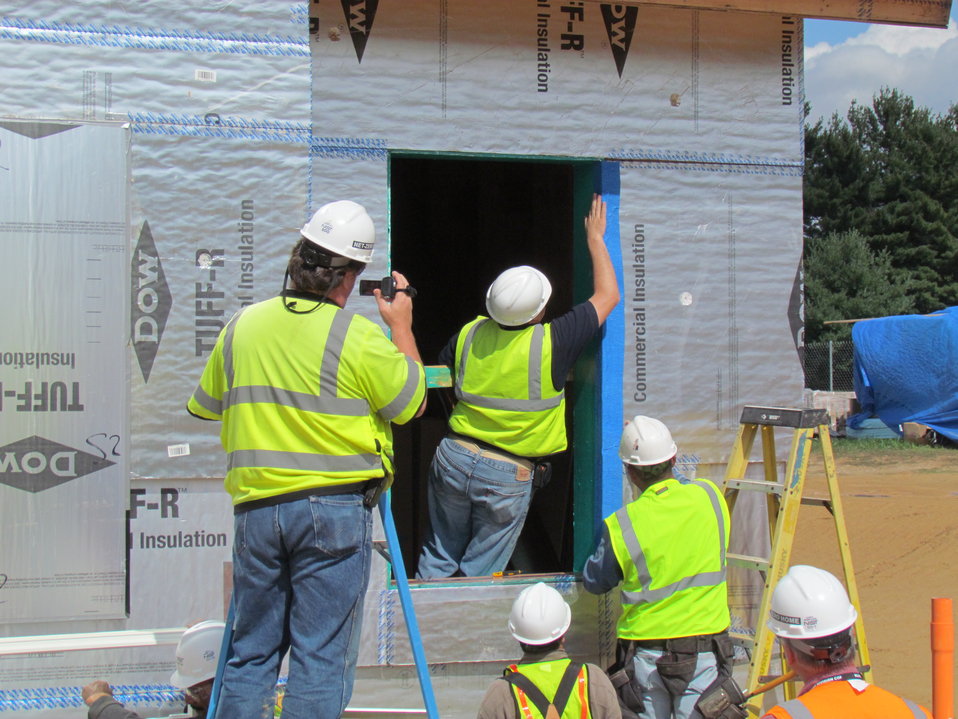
Net-Zero Energy Residential Test Facility - Preparing for installation of first window in facility.